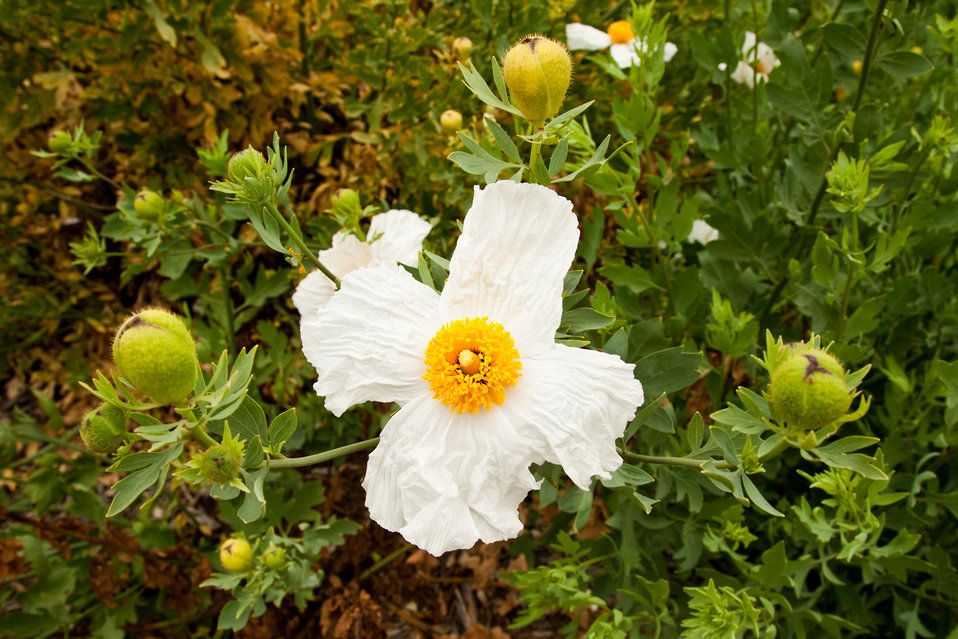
Matilija poppy (Romneya coulteri)